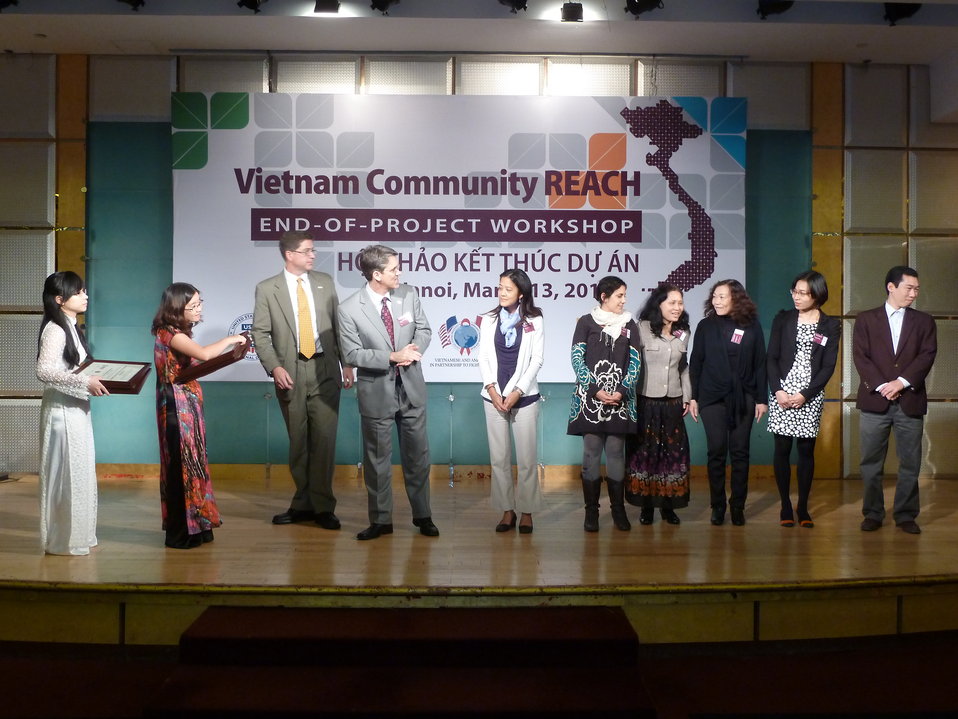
USAID, PEPFAR, and Pact award certificates to local and international partners for their work in addressing HIV in Vietnam

Community REACH project close-out with USAID and implementing partner, Pact